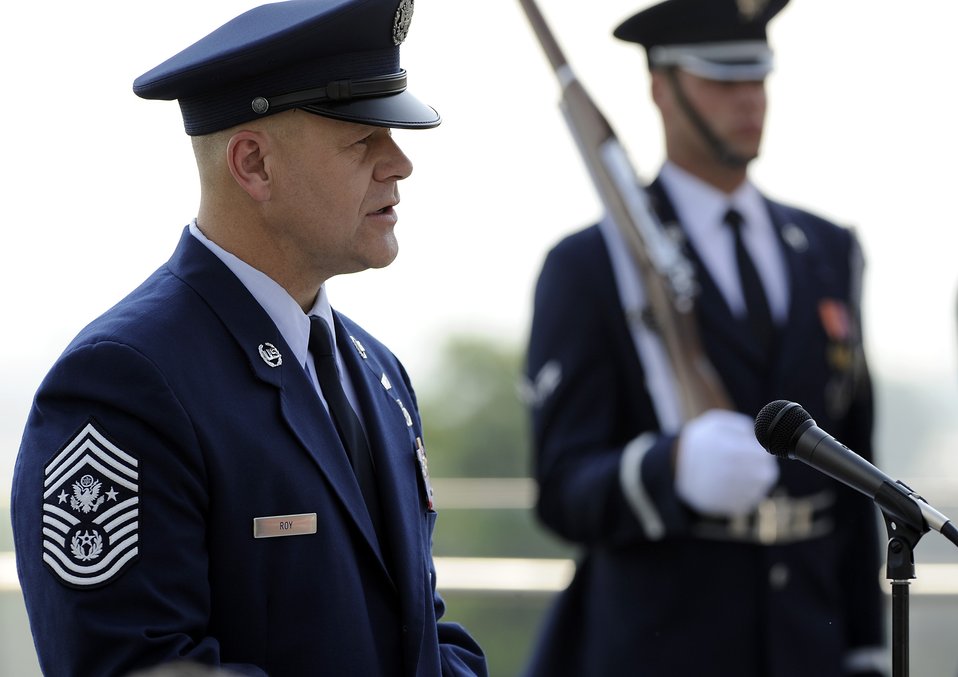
CMSAF honors fallen

Chief Master Sgt. of the Air Force James Roy reads the names of Airmen who were lost in combat in the past year during a Memorial Day ceremony May 30, 2011, at the Air Force Memorial in Arlington, Va. The fallen heroes also were honored by wreaths that were presented by members of several organizations.